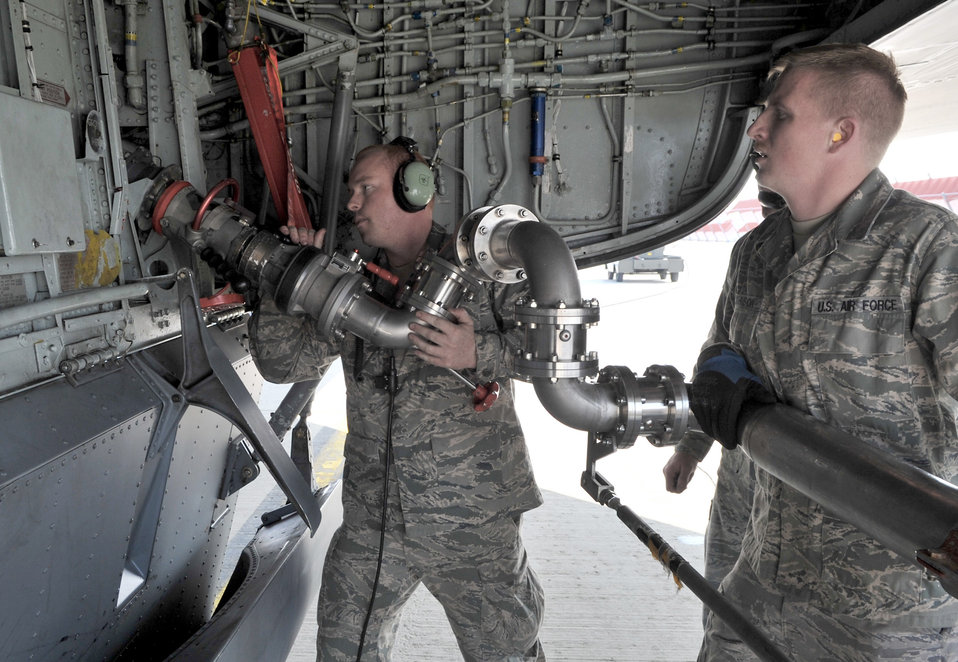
Aircraft ready for Odyssey Dawn

Staff Sgt. Tyson Thibeault (left) and Senior Airman Hursel Johnson make preparations to refuel a KC-135 Stratotanker March 29, 2011, at Ramstein Air Base, Germany, in support of Operation Odyssey Dawn. Thibeault is a crew chief assigned to the Utah Air National Guard's 151st Aircraft Maintenance Squadron at Utah Air National Guard Base, Utah. Johnson is a fuels distribution operator assigned to the 86th Logistics Readiness Squadron.